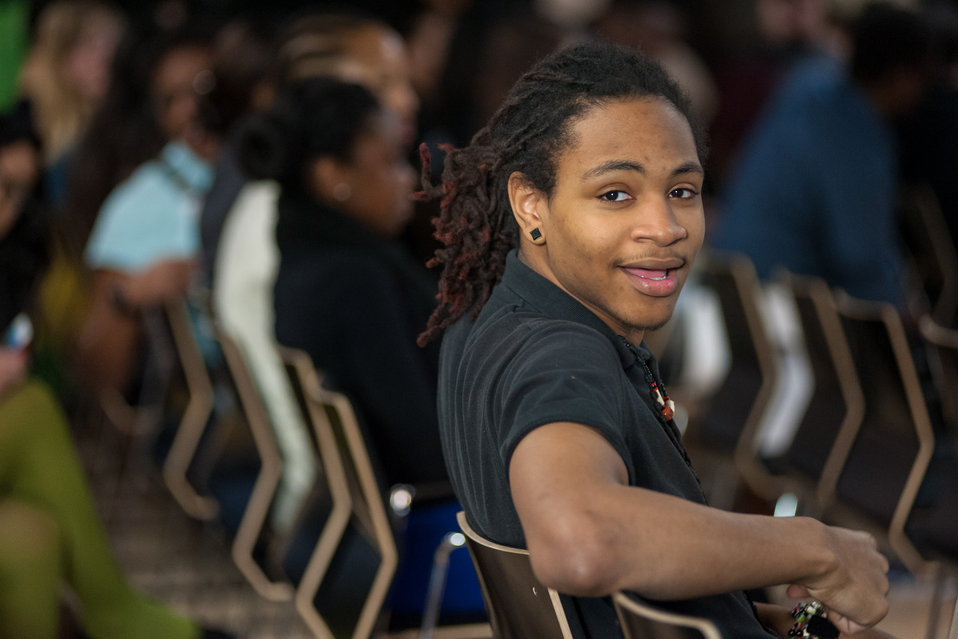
Mentor NDFW Event 2014

Mentor Foundation USA, in partnership with the National Institute on Drug Abuse (NIDA) and other key partners hosted a Youth Drug Facts Rally at the House of Sweden on Thursday, 30th January 2014. Approximately 200 students from five local high schools attended and had the opportunity to interact with top U.S. scientific experts, and inspiring guest speakers to “shatter the myths” about drugs and substance abuse, while pledging to stay drug-free.